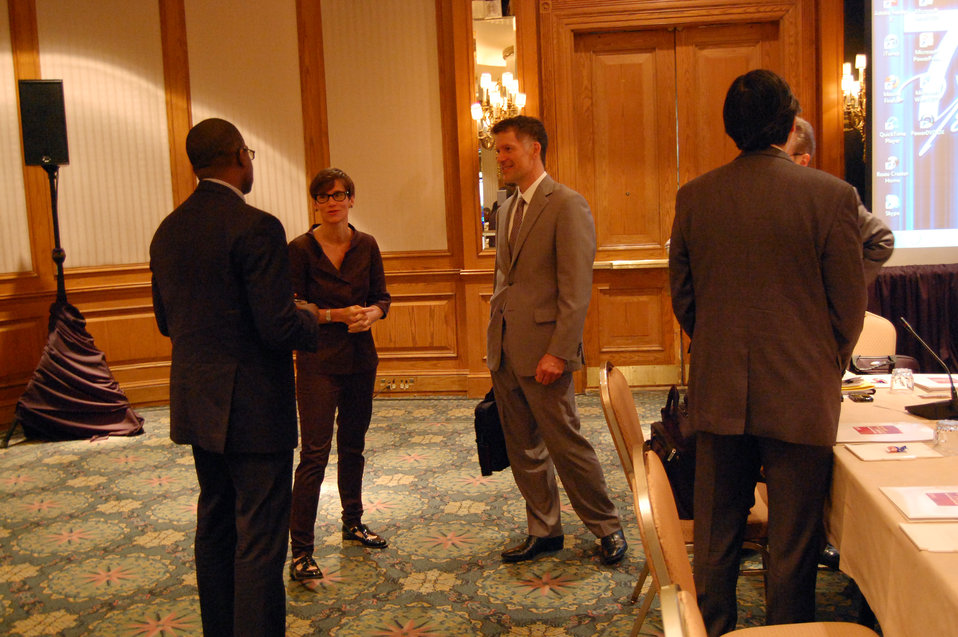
PACHA conf017